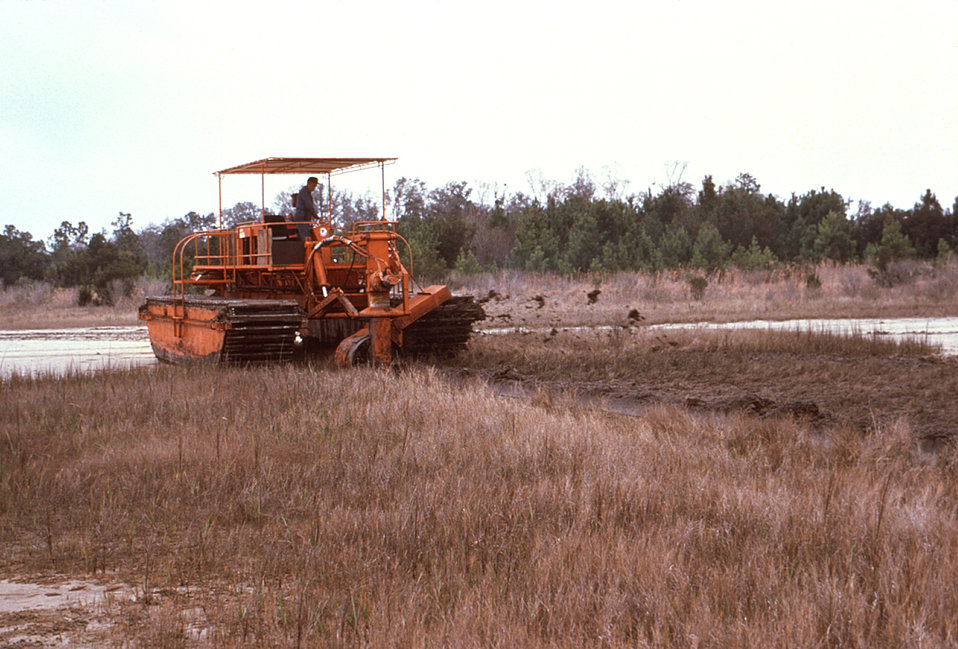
This amphibious rotary ditcher (ARD) was outfitted with a 'cutter-slinger' head, which was used in the process of creating a drainage ditch.